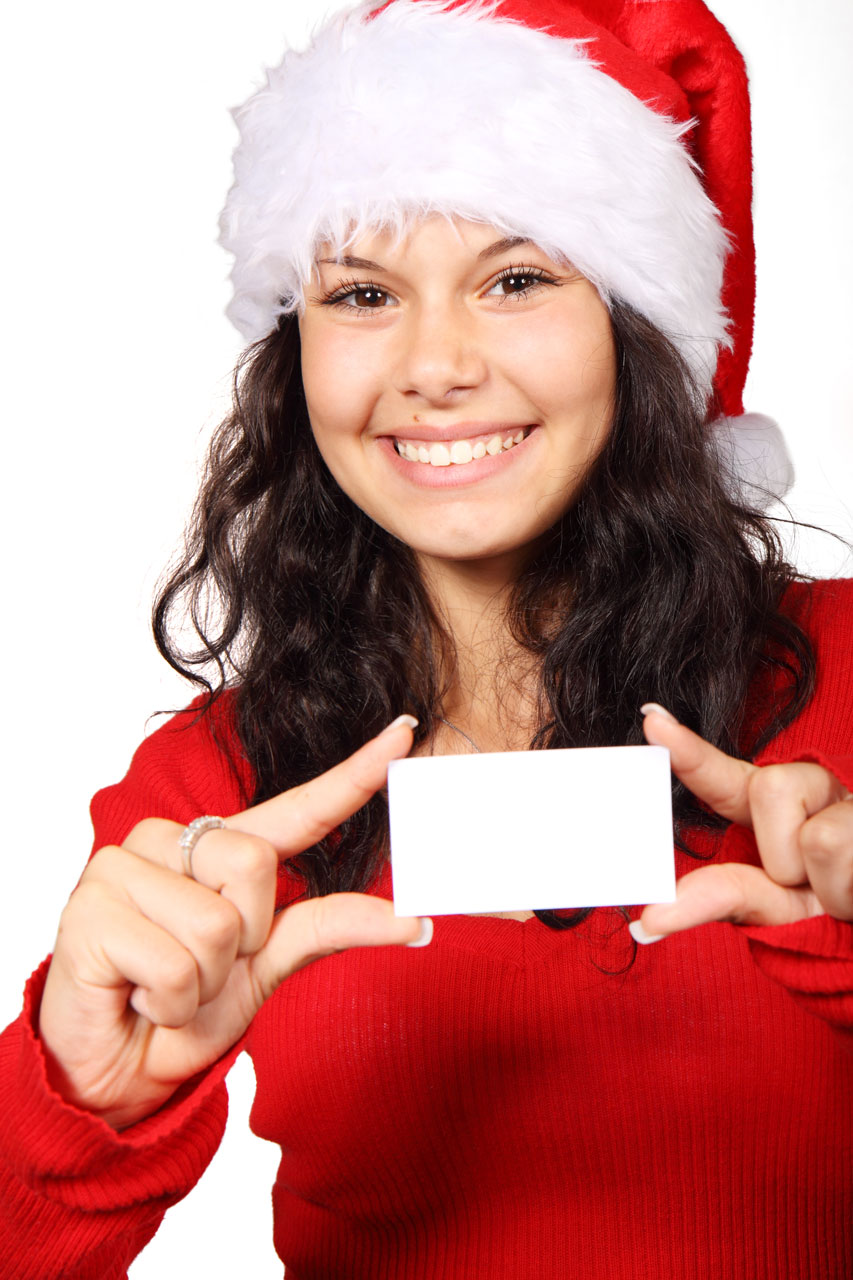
Santa and blank card

Cute santa claus holding a business card.